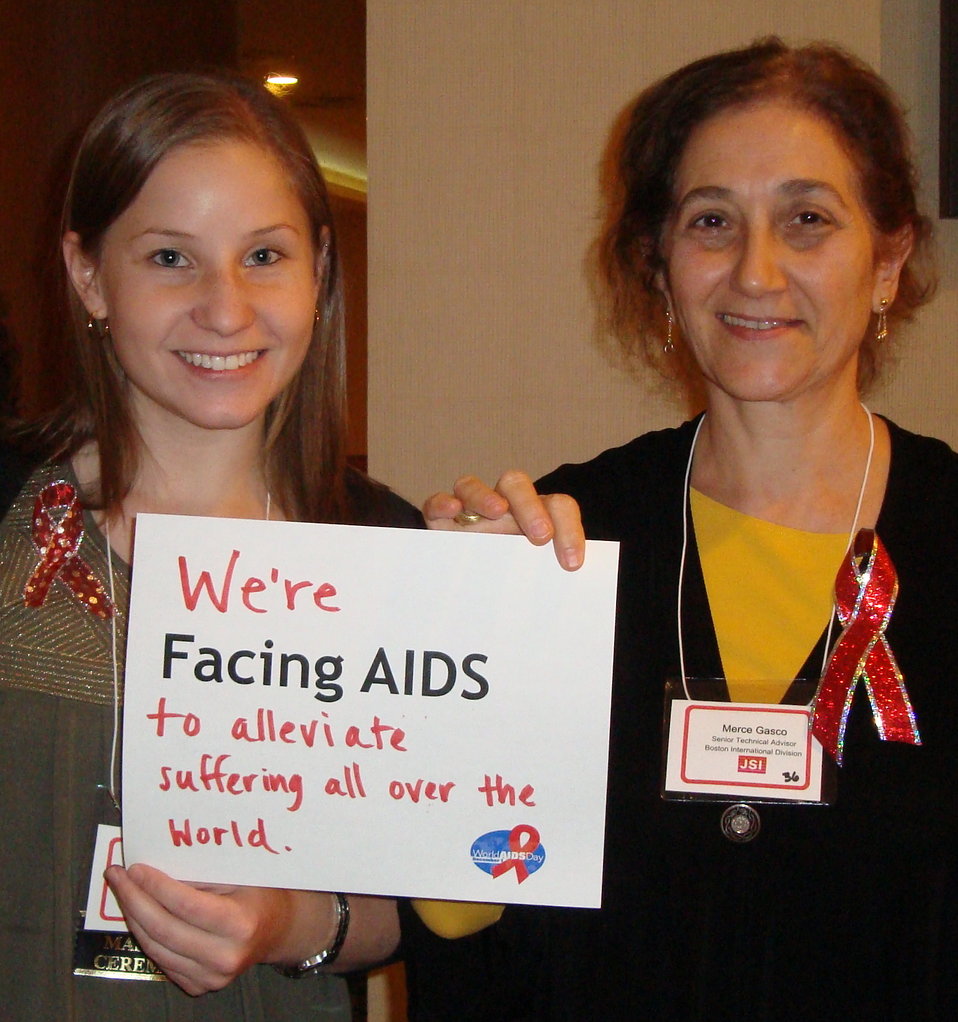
FacingAIDSCampaign 039